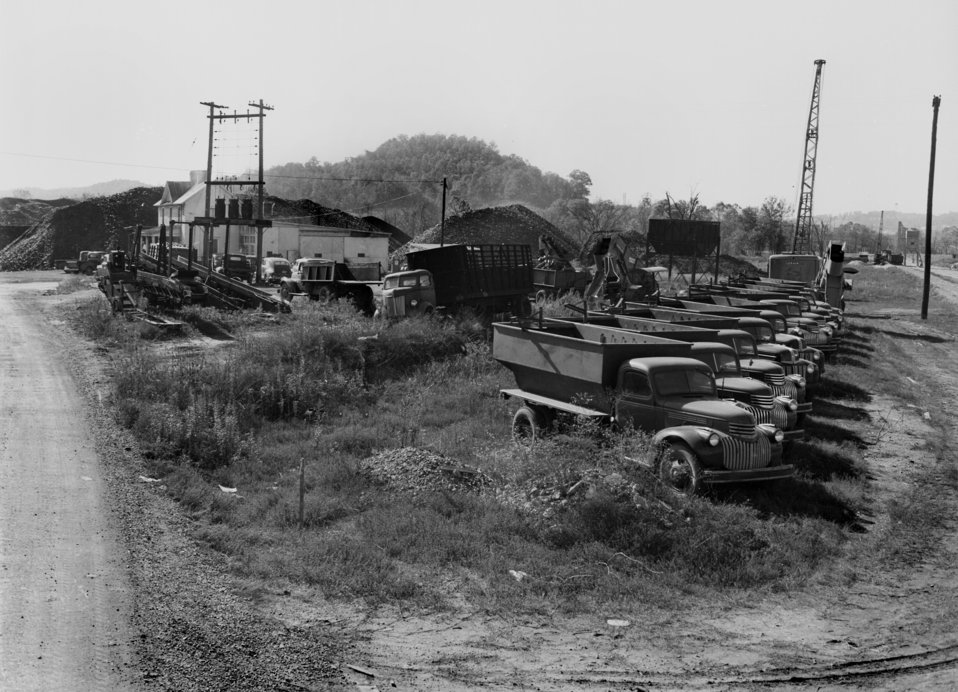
Coal Yard Gamble Valley Oak Ridge

5271-6 DOE Photo by L.S. Chastagner

Coal Yard Gamble Valley Oak Ridge Tennessee 10/19/1948